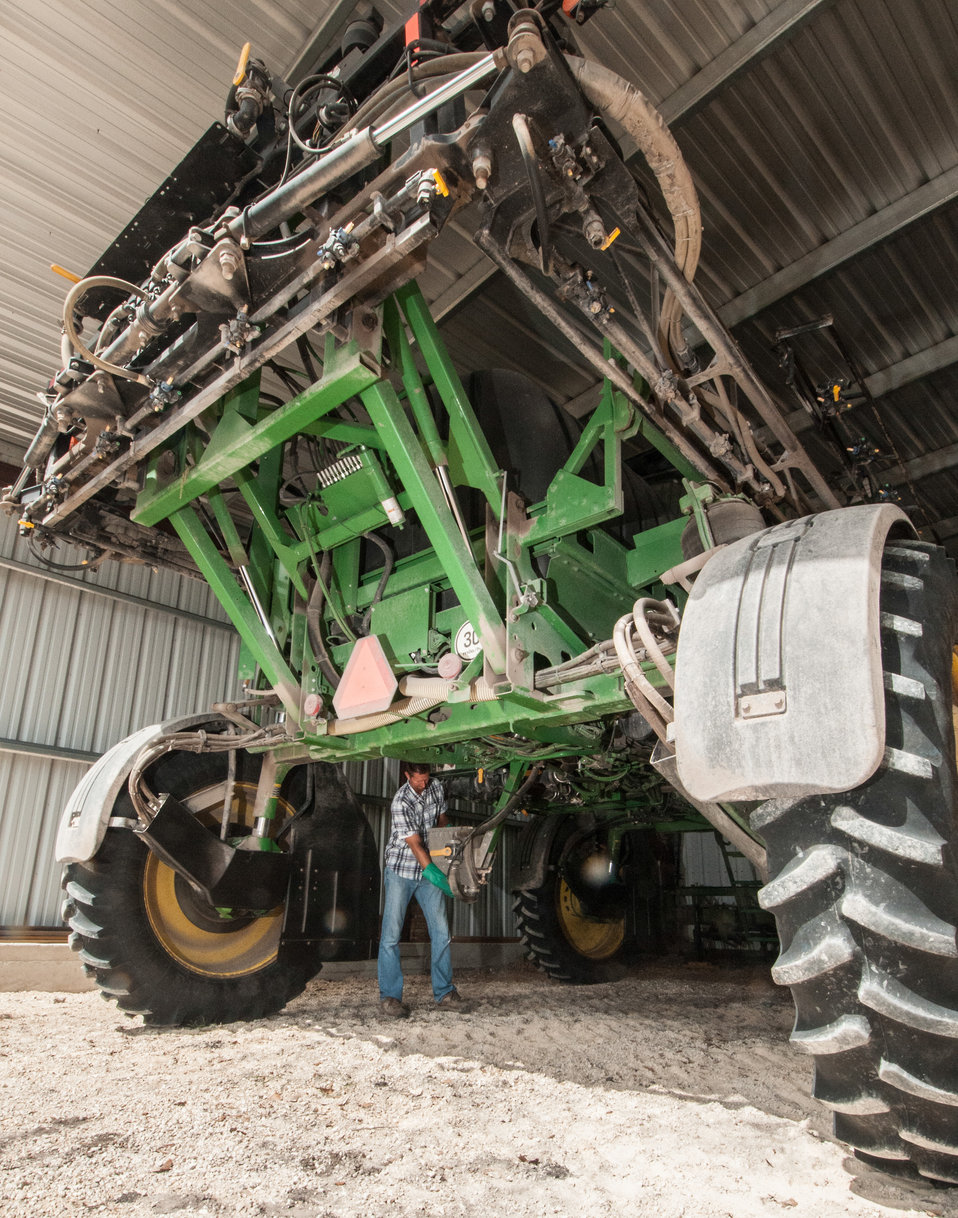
Michael Popp (pronounced Pope) performs mechanical checks on farm equipment used for tilling, planting, spraying and harvesting crops at Popp Farms 05 in El Campo, TX on Jun. 20, 2013. The Popp family spans five generations and grows cotton and milo (grain sorghum) on 2,400 acres of farmland. Michael chose farming after graduating from Texas A and M with a degree in Agriculture Economics and a Masters degree in Finance. The farm is a member of the United Agricultural Cooperative, Incorporated.